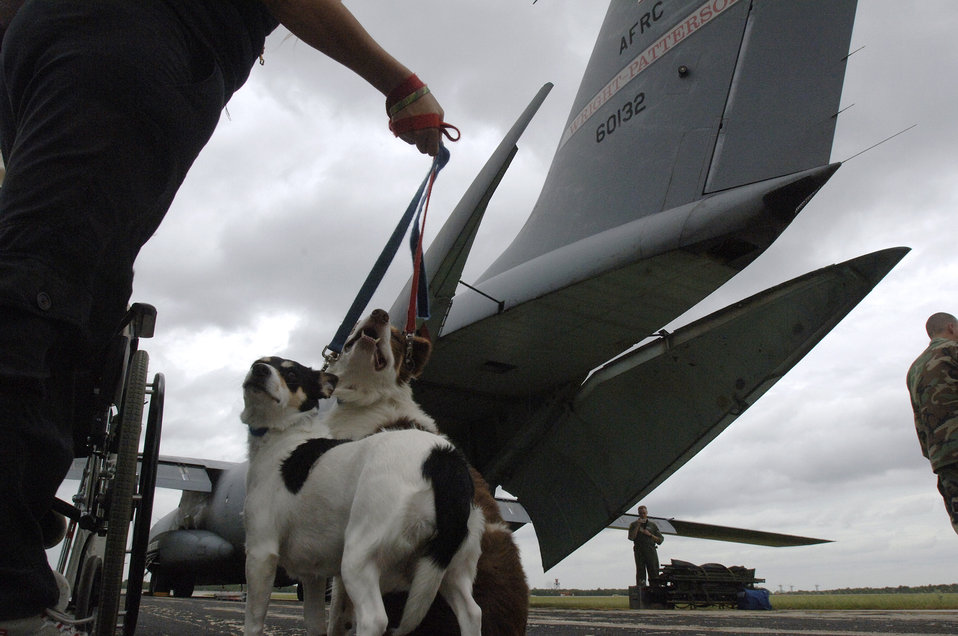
Airlifted to safety

BEAUMONT, Texas (AFPN) -- Shep and Lilly make their way to a C-141 Starlifter from Wright-Patterson Air Force Base, Ohio, during the final hours of an air evacuation from the Southeast Texas Regional Airport here Sept. 22. The dogs and their owner, Linda Haley, were evacuated from the path of Hurricane Rita.